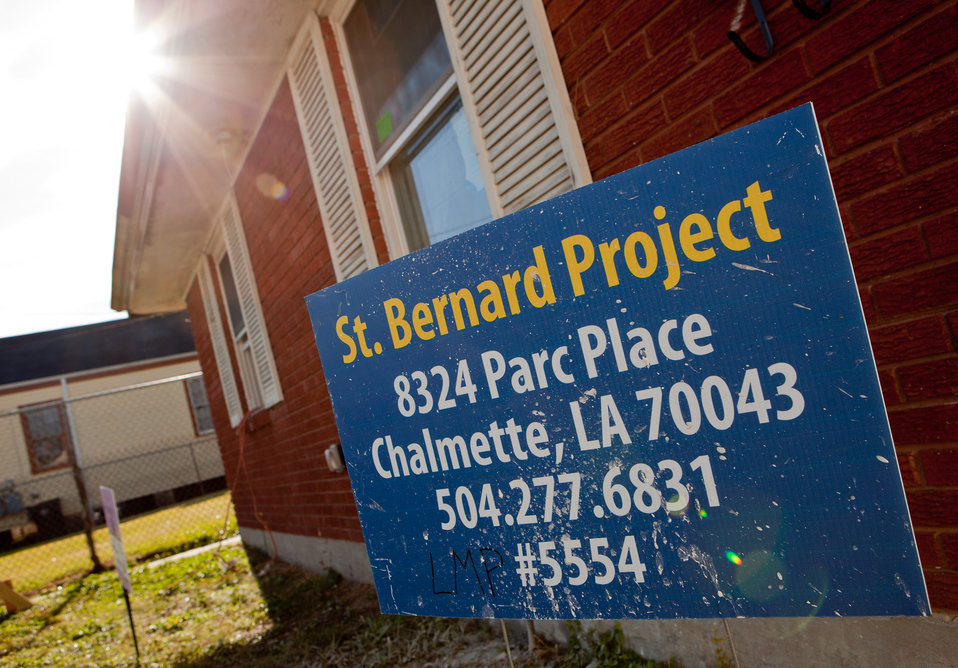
Veteran's Day in New Orleans 1 of 10

A home in New Orleans being restored by the St. Bernard Project.